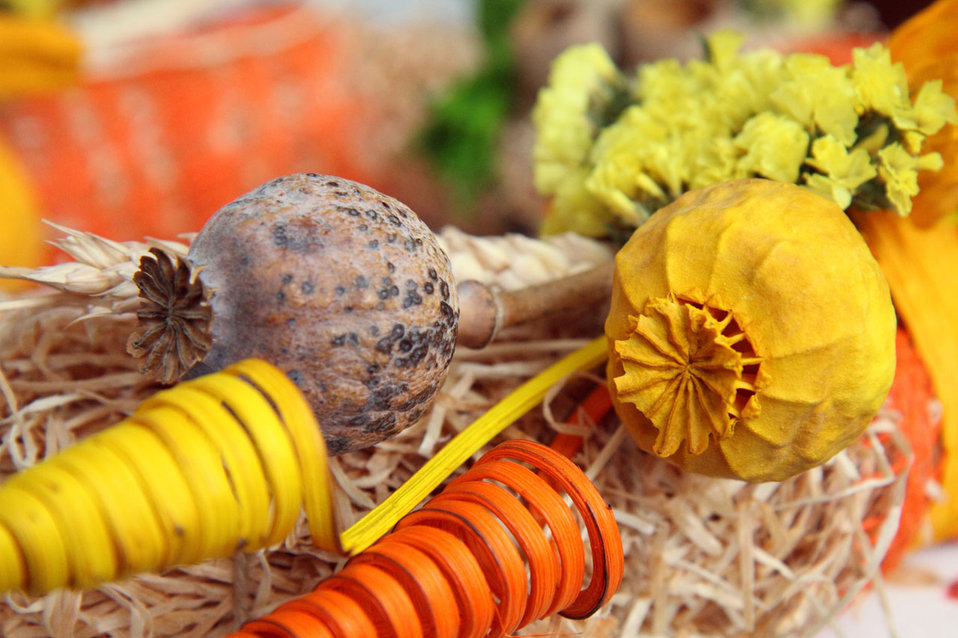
Poppy head decoration on wreath.